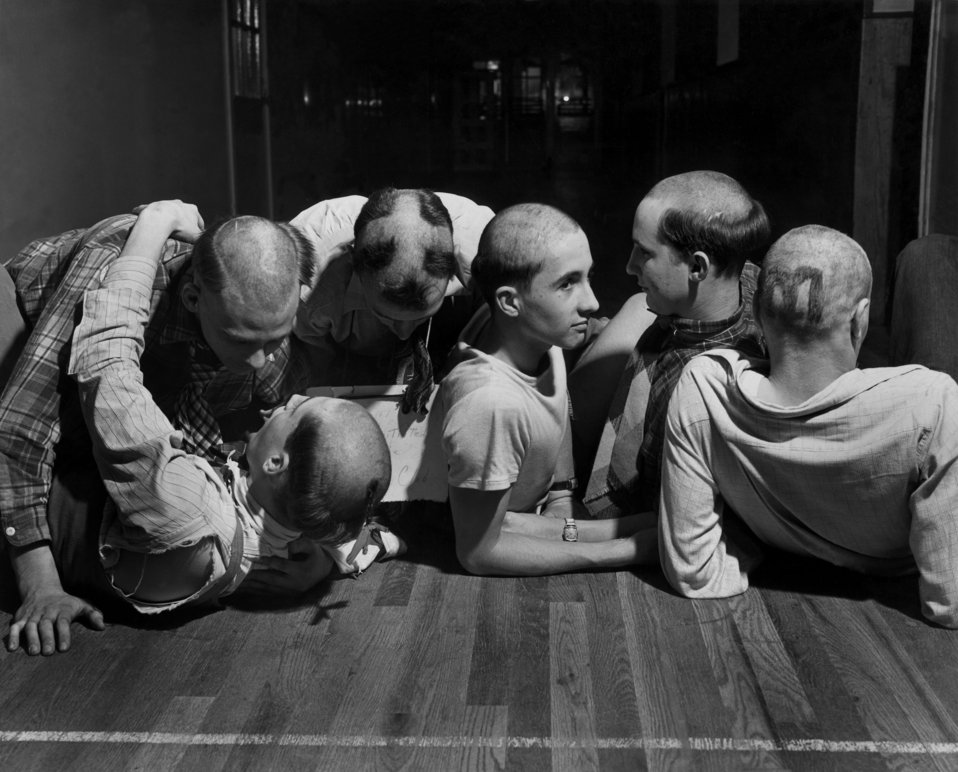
High School Basketball team Letterman's team initiation Oak Ridge

3229-1 DOE photo by Ed Westcott

High School Basketball team Letterman's team initiation Oak Ridge Tennessee 1-8-1947